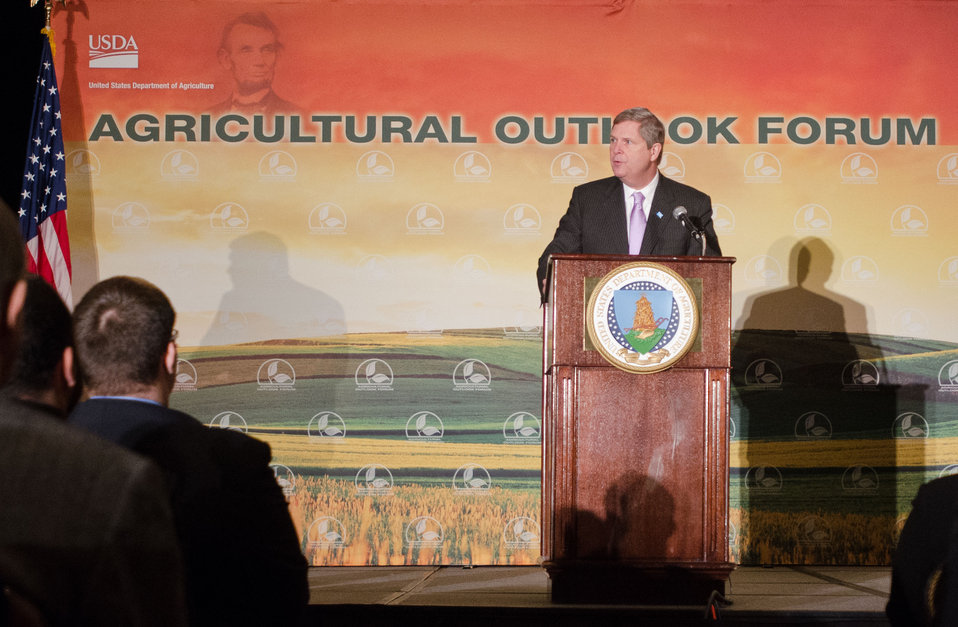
Agriculture Secretary Tom Vilsack makes remarks at the 2012 Agricultural Outlook Forum, “Moving Agriculture Forward” in Arlington, VA., on Thursday, February 23, 2012.